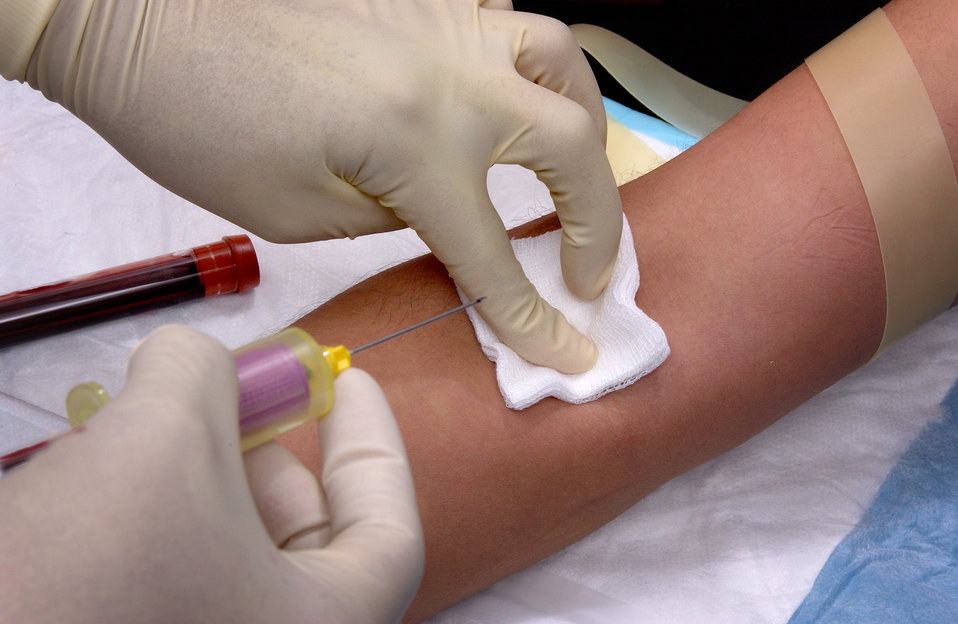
This image depicts a trained phlebotomist, i.e., a technician skilled in the practice of drawing blood from a patient, who was performing a percutaneous antecubital venipuncture into this patient's right antecubital vein. This image is the fifteenth in a series of 19 images outlining the steps involved in extracting blood during the venipuncture process.